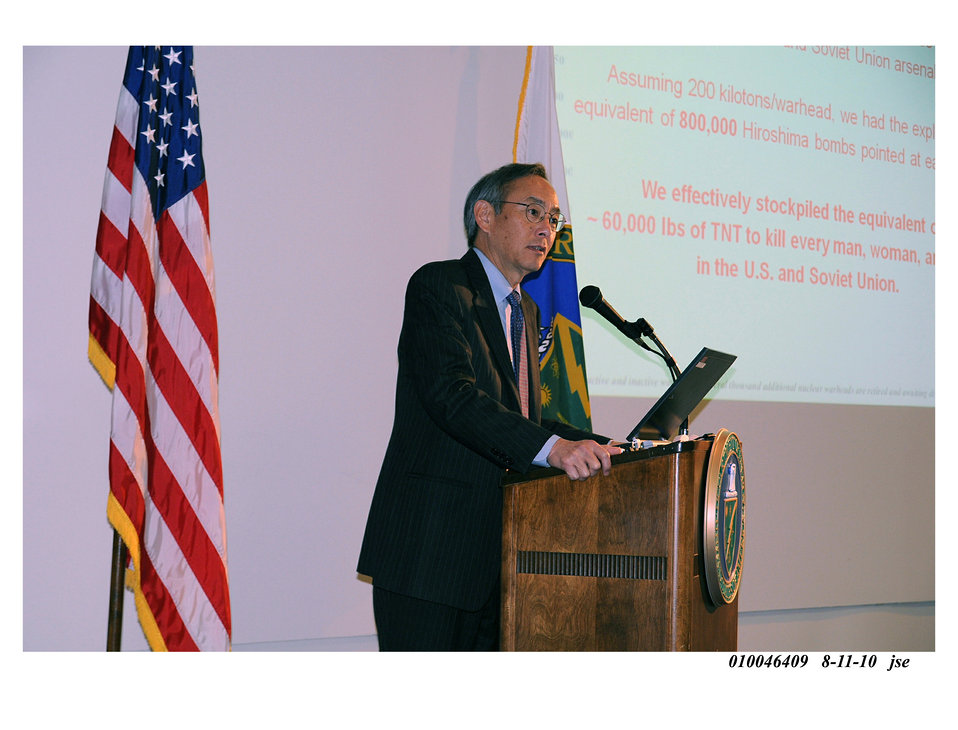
Secretary Chu thanks employees at NNSA’s Pantex Plant for the vital role they play in implementing President Obama’s unprecedented nuclear security agenda during a visit to the site. (Aug. 11, 2010)